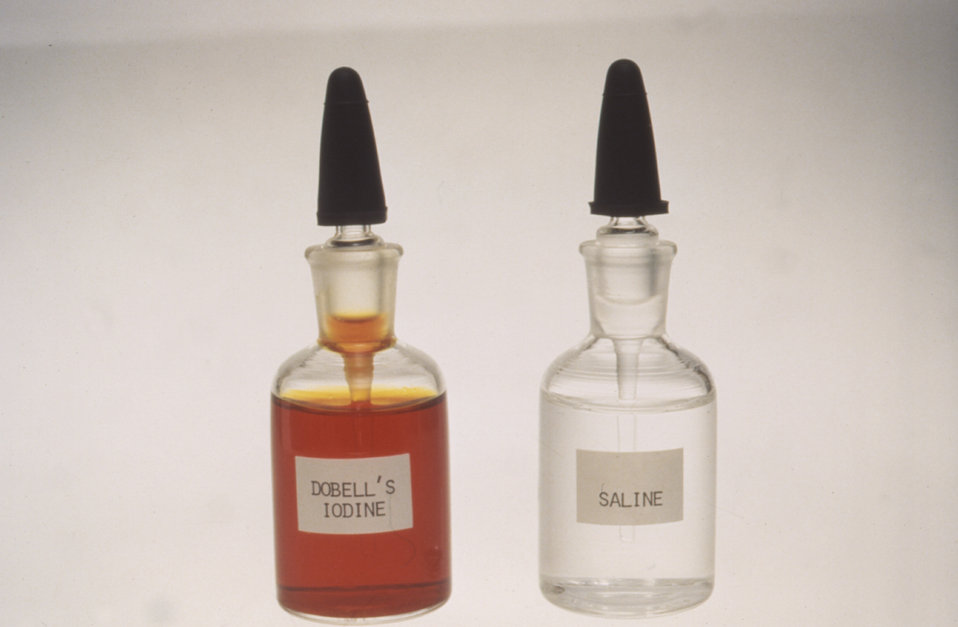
This image depicts two dropper bottles of iodine (Lt.), and saline (Rt.) used in a parasitology laboratory.